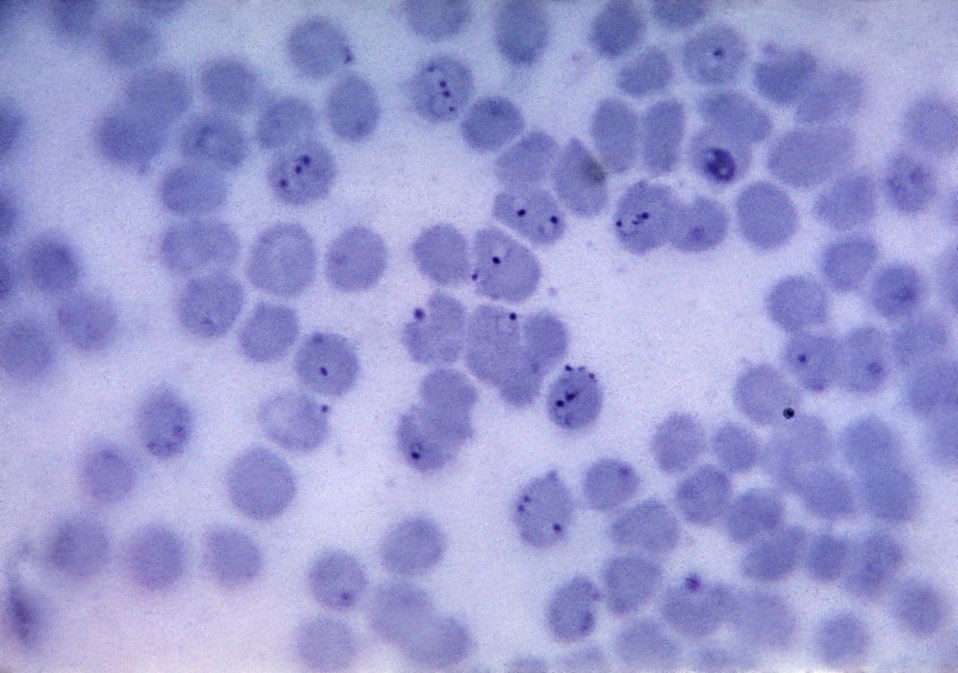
Plasmodium falciparum rings in erythrocytes. Parasite.